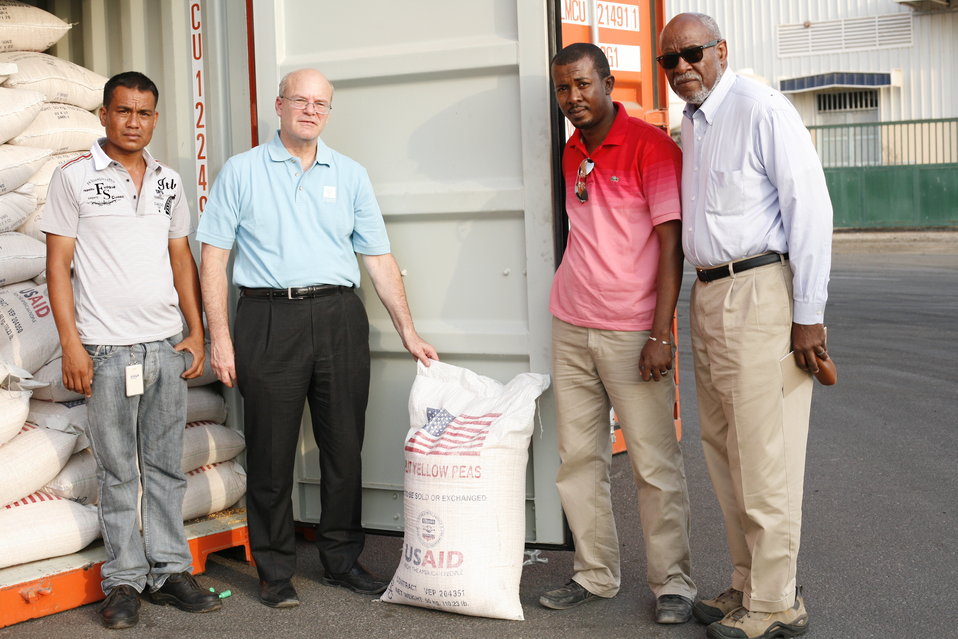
USAID Deputy Administrator Steinberg and Assistant Secretary Carson Review U.S. Food Aid in Djibouti

U.S. Agency for International Development (USAID) Deputy Administrator Donald K. Steinberg, second from left, and Assistant Secretary of State for African Affairs Johnnie Carson, right, review U.S. food aid in Djibouti, Republic of Djibouti, on July 8, 2011.